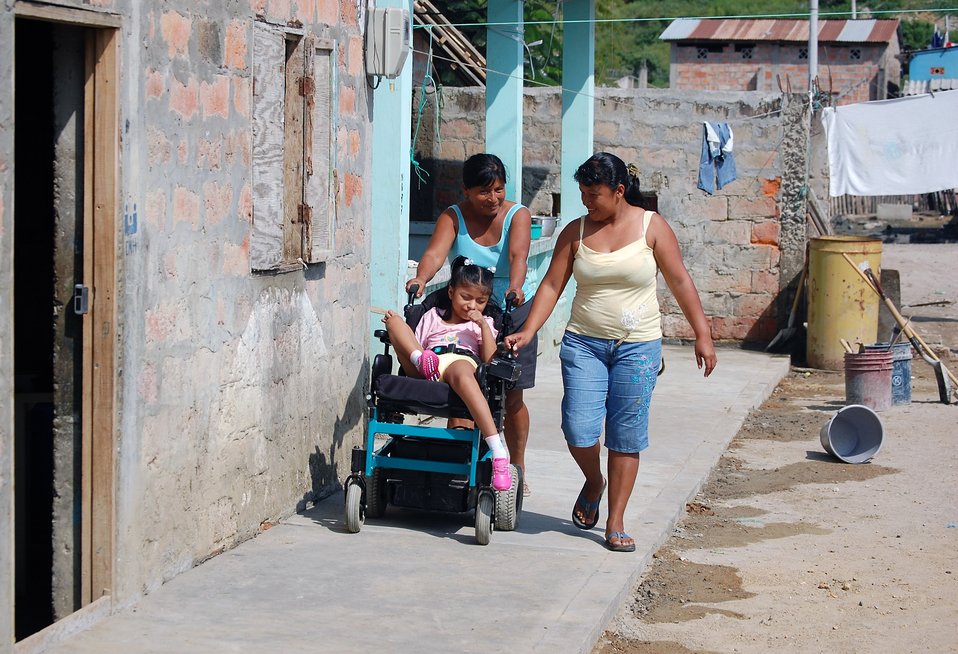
Life-changing wheelchair and ramp donation for Ecuadorian girl

Eleven-year-old Kelly Yuleisy Arcentales is escorted by her mother (right) and aunt (left) on the new sidewalk that was paid for by donations collected by Airmen from the 964th Expeditionary Airborne Air Control Squadron who are deployed to Forward Operating Location Manta, Ecuador. The completion of the wheelchair ramp from Kelly's home to the Jaramijo city sidewalk finalized a three month project by the Airmen to provide Kelly with access to her local community.